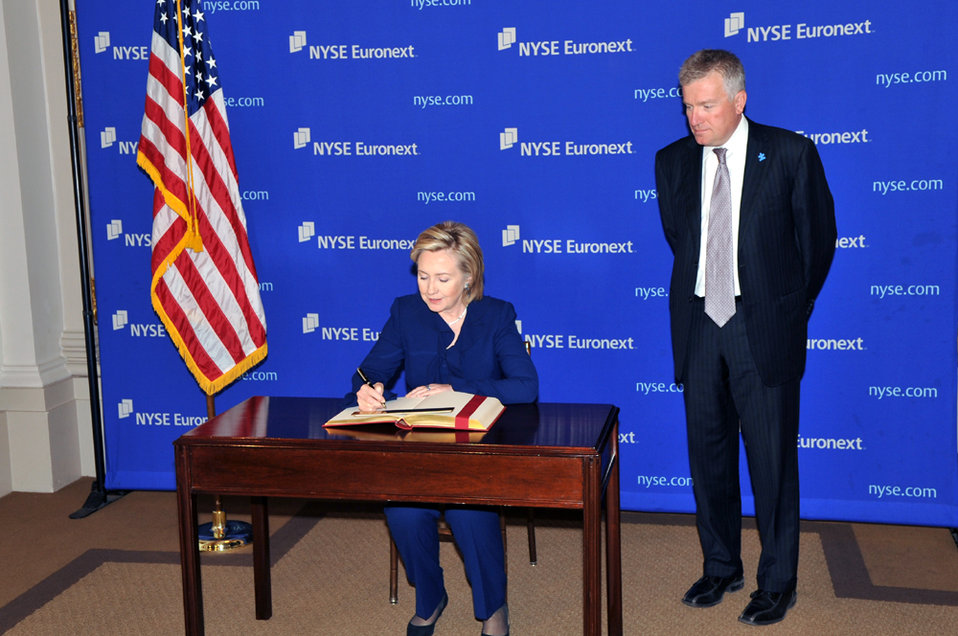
UNGA 2009: Secretary Clinton Meets With New York Stock Exchange CEO

U.S. Secretary of State Hillary Rodham Clinton signs a document while meeting with New York Stock Exchange (NYSE) Chief Executive Officer Duncan Niederauer at the NYSE during the 64th Session of the UN General Assembly in New York City, New York September 21, 2009.